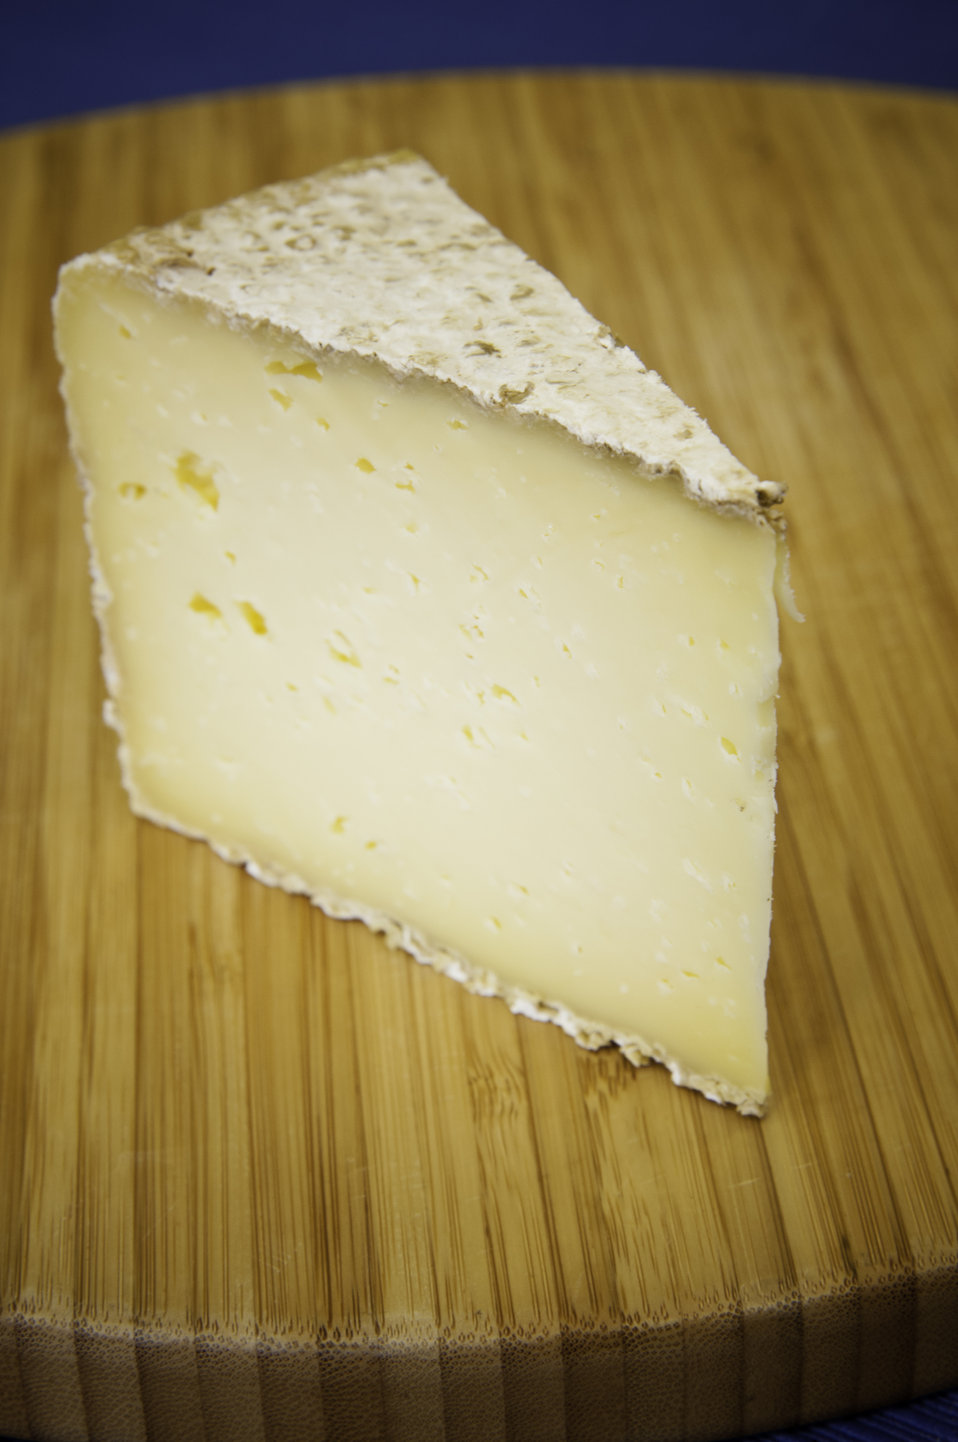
Chapel’s Country Creamery ages their Chapelle, Talbot Reserve and Bay Blue in a climate-controlled cave, which gives the cheese its unique flavor. The cave-aged cheeses develop their own natural rind. The dairy starts with fresh raw milk produced on their Grade A dairy farm in Easton, MD. The dairy herd contains grass fed Jersey and Holstein cows that produce high quality milk, rich in cream. The milk is all-natural and contains no synthetic hormones, antibiotics, or chemical compounds.